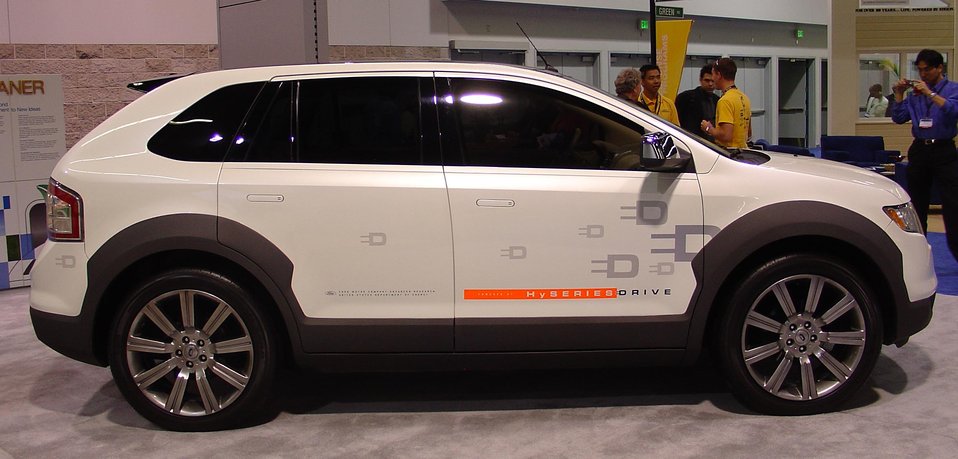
Ford Edge HySeries Chasis 208 at the EVS23 Conference in Anaheim, California.

The Ford Edge with HySeries Drive is the world's first drivable fuel cell hybrid electric vehicle with plug-in capability. It is able to operate using fuel cell, small gasoline or diesel energy connected to an electric generator to make electricity. The HySeries power train delivers a combined city/ highway gasoline equivalent fuel economy rating of 41 mpg. For those who drive less than 50 miles each day, the average jumps to move than 80 mpg.